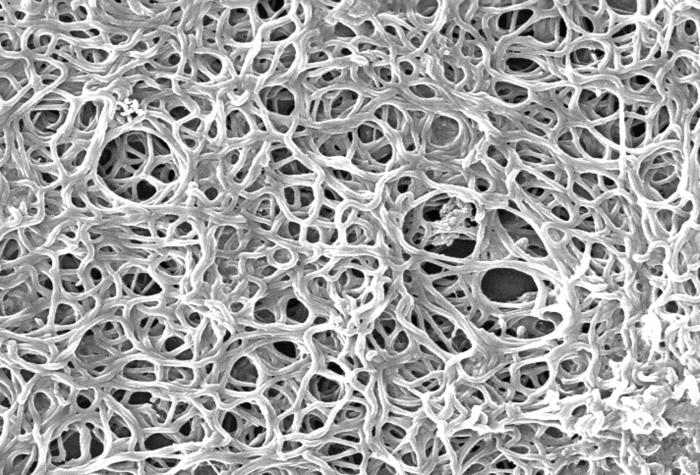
This scanning electron micrograph depicts a grouping of numerous Gram-negative, anaerobic, Borrelia burgdorferi bacteria, which had been derived from a pure culture.